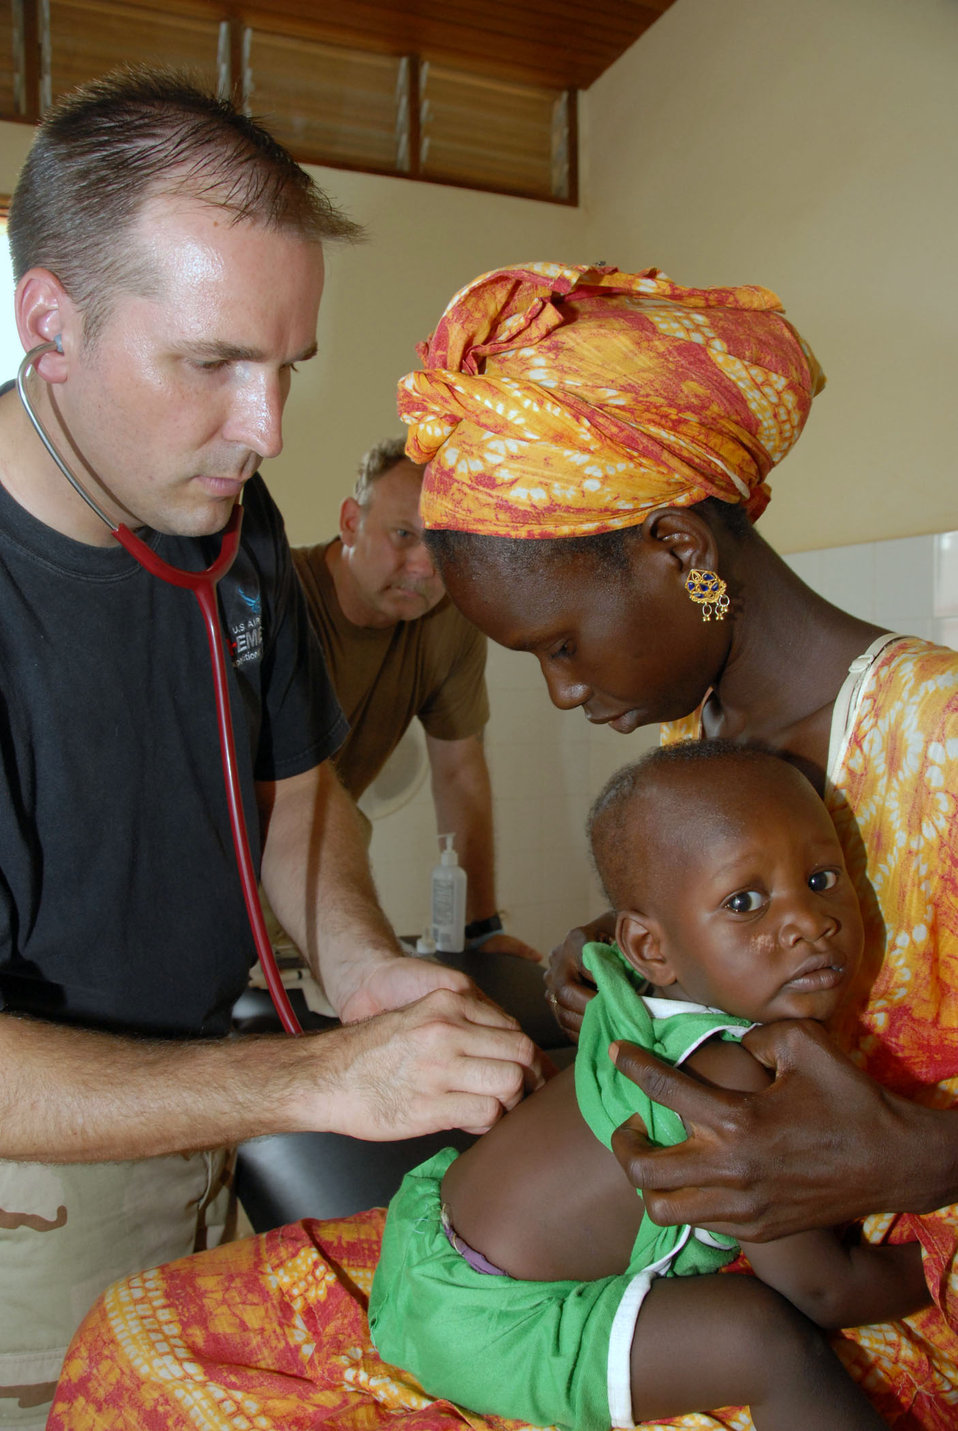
Medics bring relief to Senegal

Maj. (Dr.) Darin Brimhall performs a well baby exam while Master Sgt. Rick Brewer assists as part of Shared Accord 07 June 16 to 28 in Linguere, Senegal. Major Brimhall is a physician assigned to the 752nd Medical Squadron, and Sergeant Brewer is a medical technician from the 445th Aeromedical Staging Squadron.